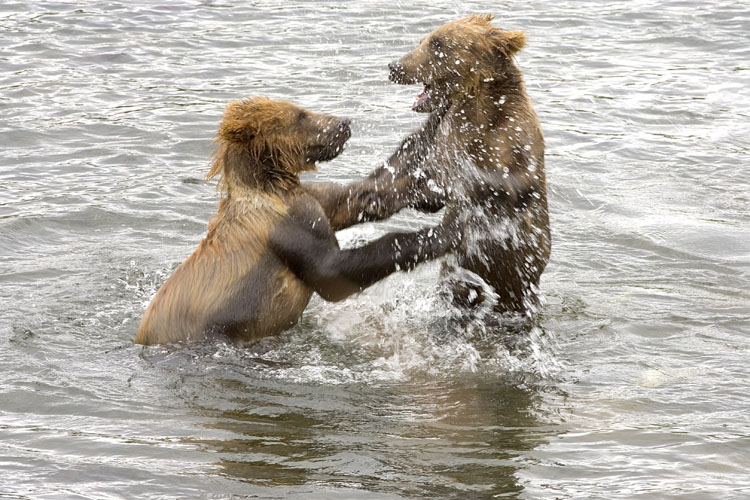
KOD Hildebrand (17)

Kodiak National Wildlife Refuge- Wildlife